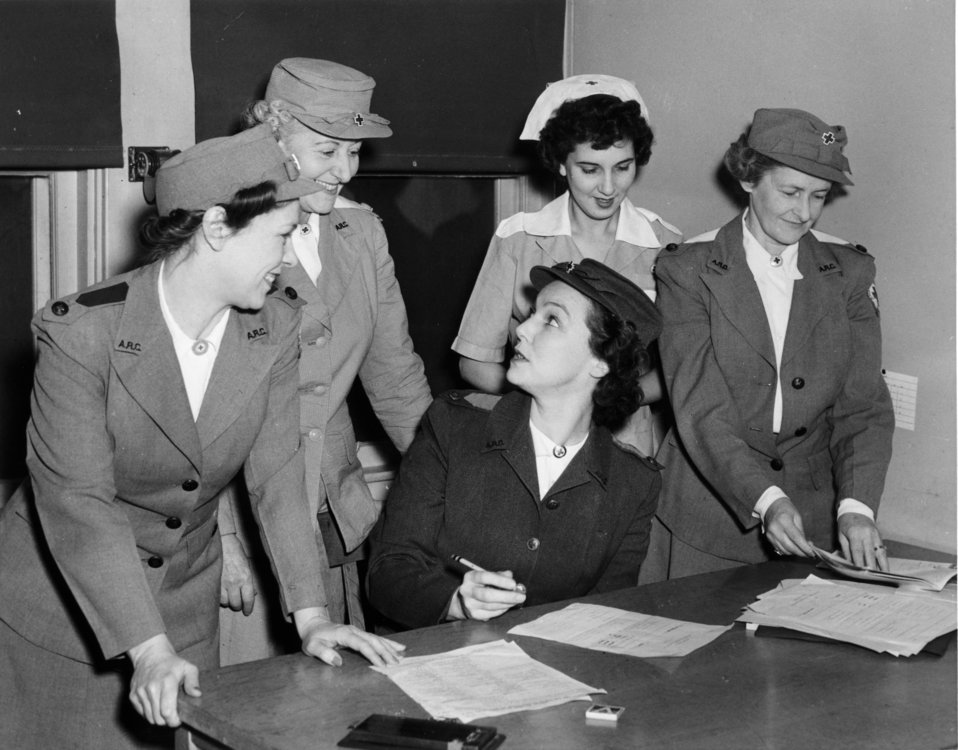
Medical at Oak Ridge